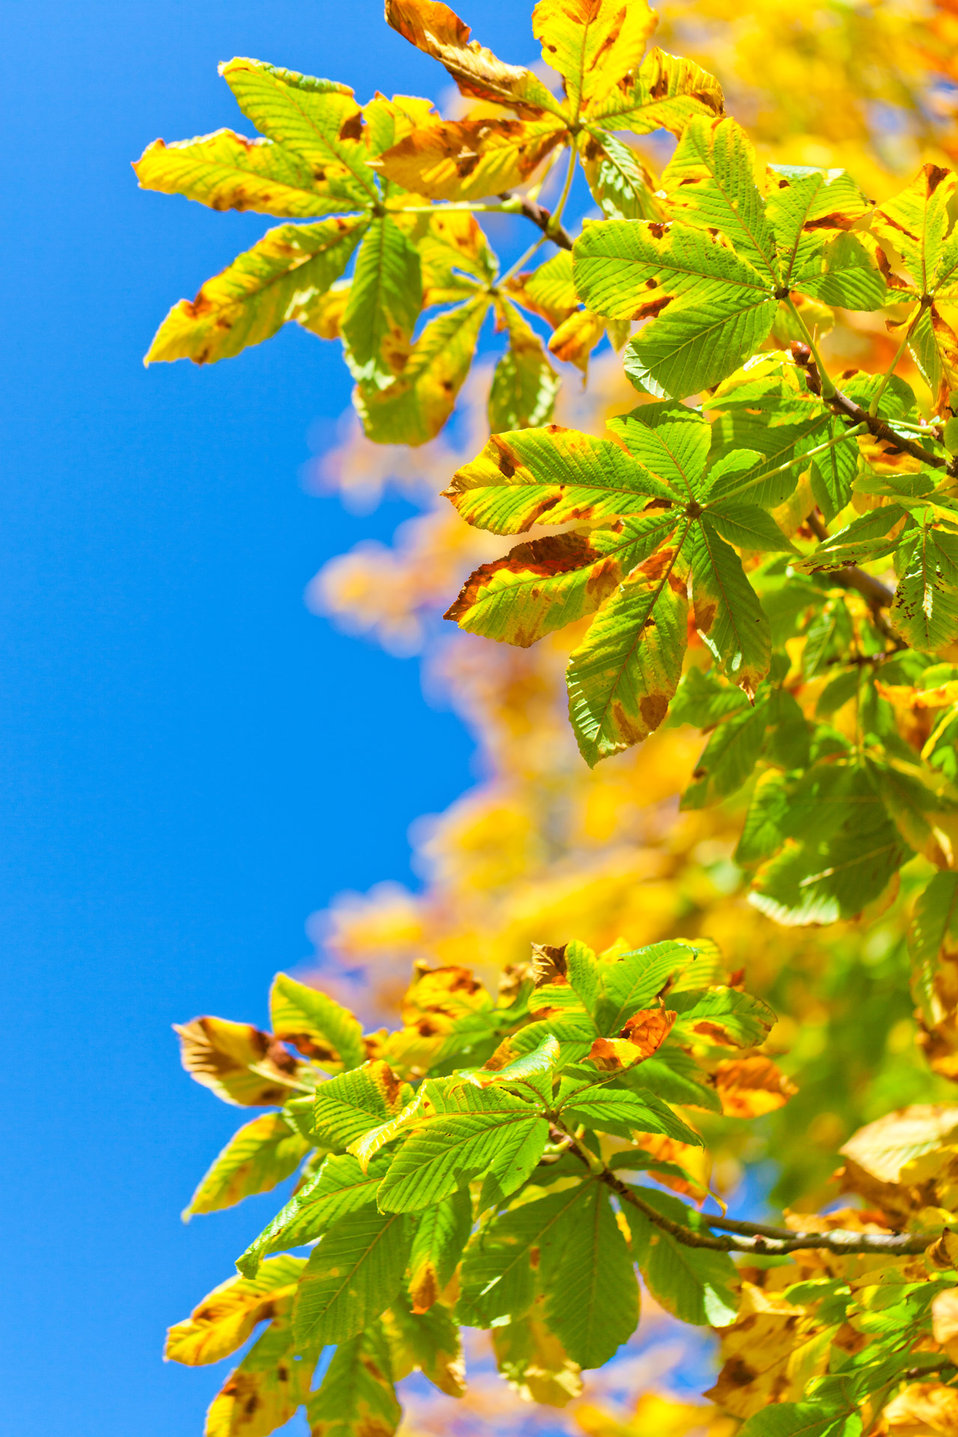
Autumn horse chestnut tree

Buckeye tree leaves in autumn.